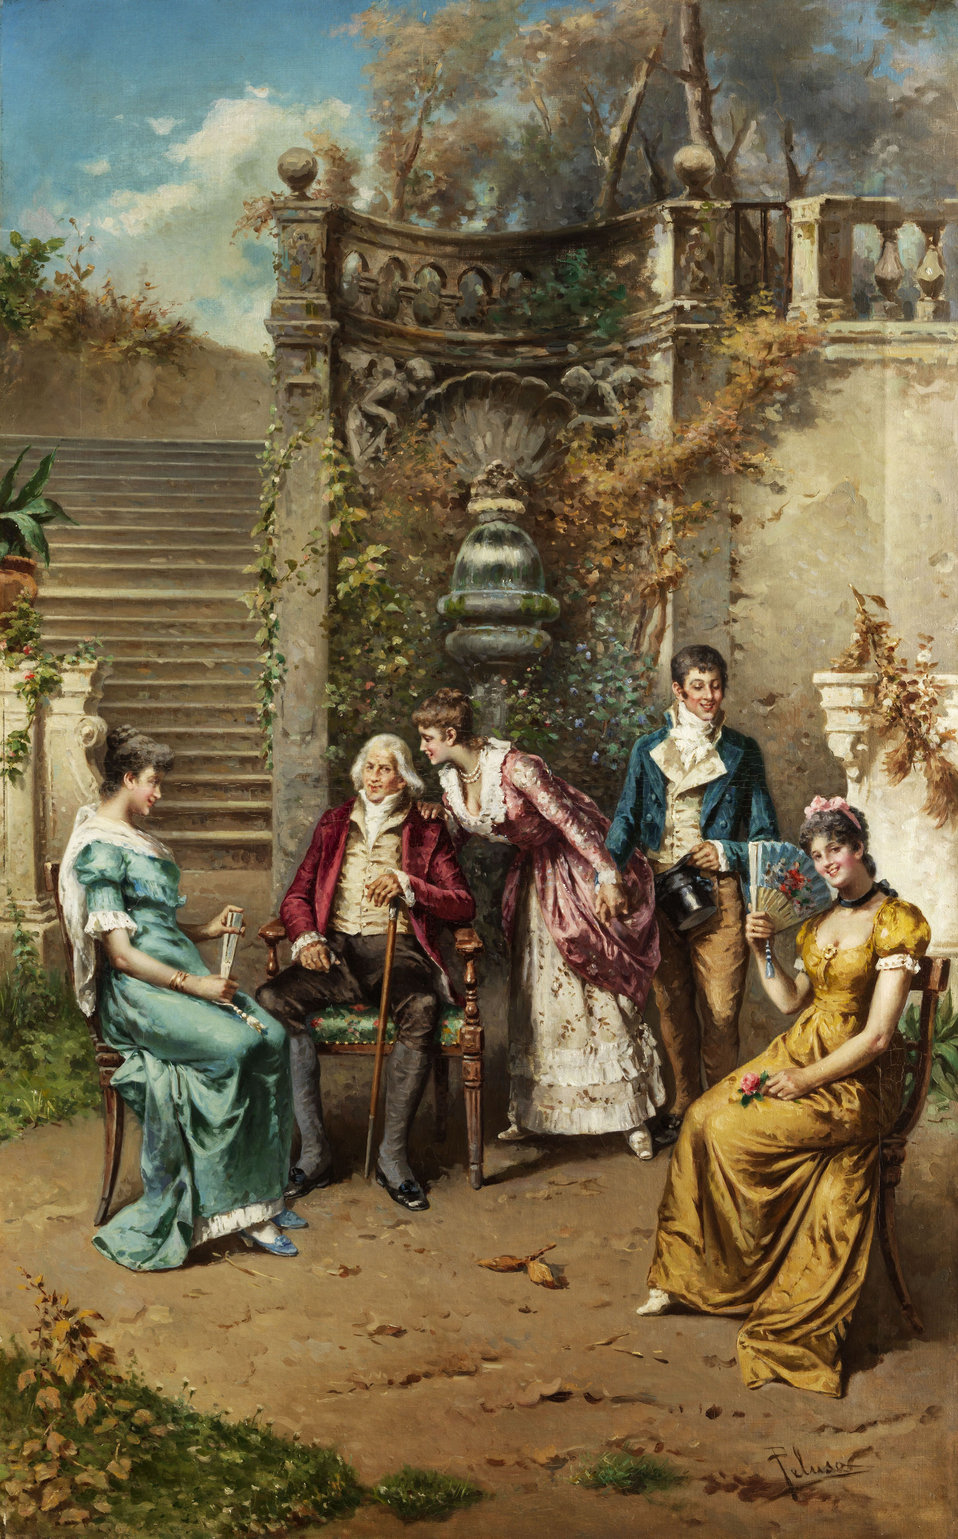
Francesco Peluso Höfische Gesellschaft am Parkbrunnen